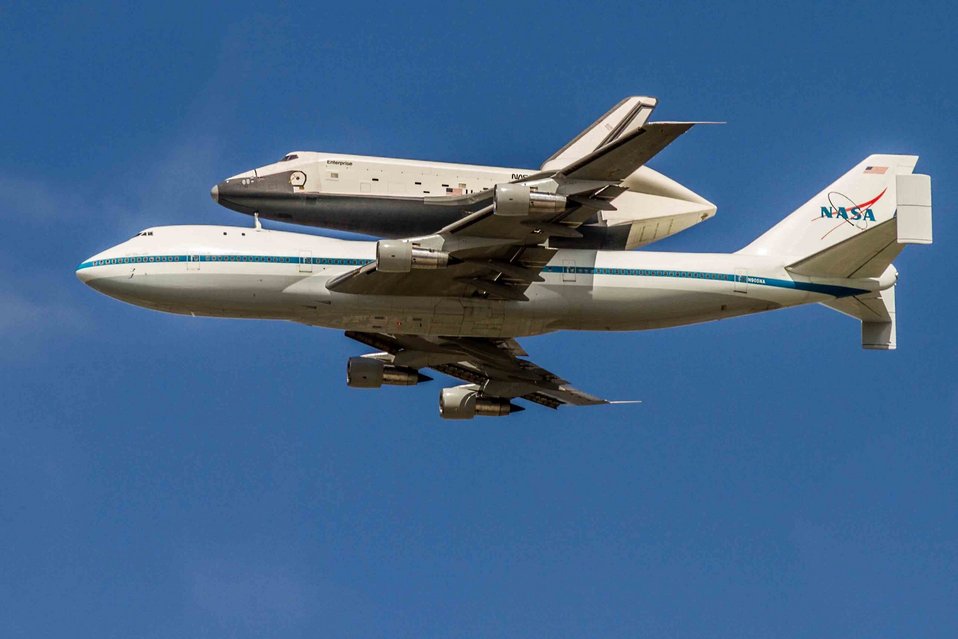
Enterprise

Space shuttle enterprise on last flight to ny for the intrepid museum.